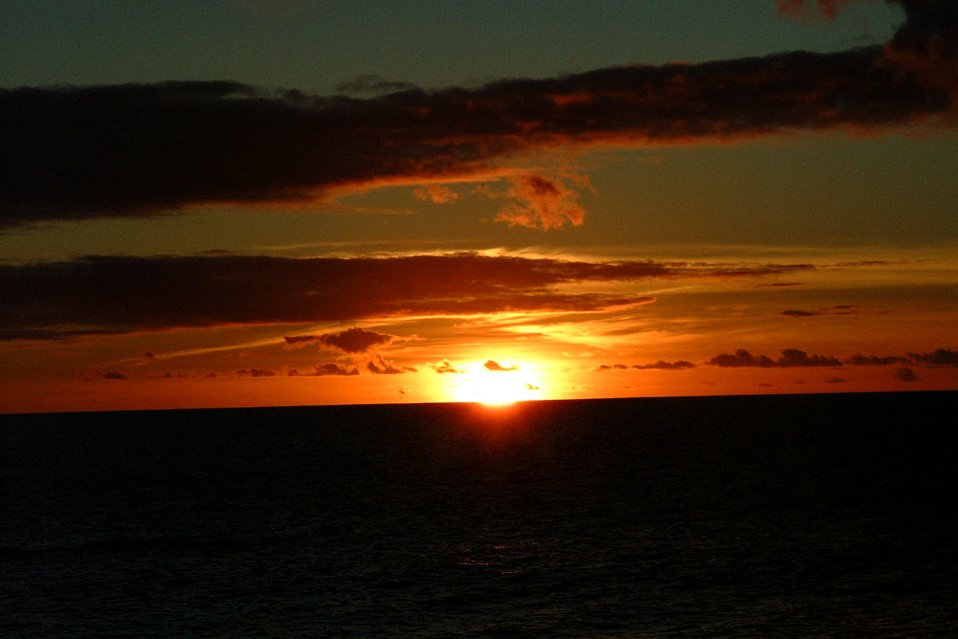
Uploaded by request of Filipa Freitas

Taken in Ponta do Sol in Madeira's Island - Portugal

This is a sunset by the sea in a place called Ponta do Sol in Madeira Island .
The picture represents a sunset in a place that the sun shines almost every day of the year. It was also a peaceful moment that bounds you with the NATURE.